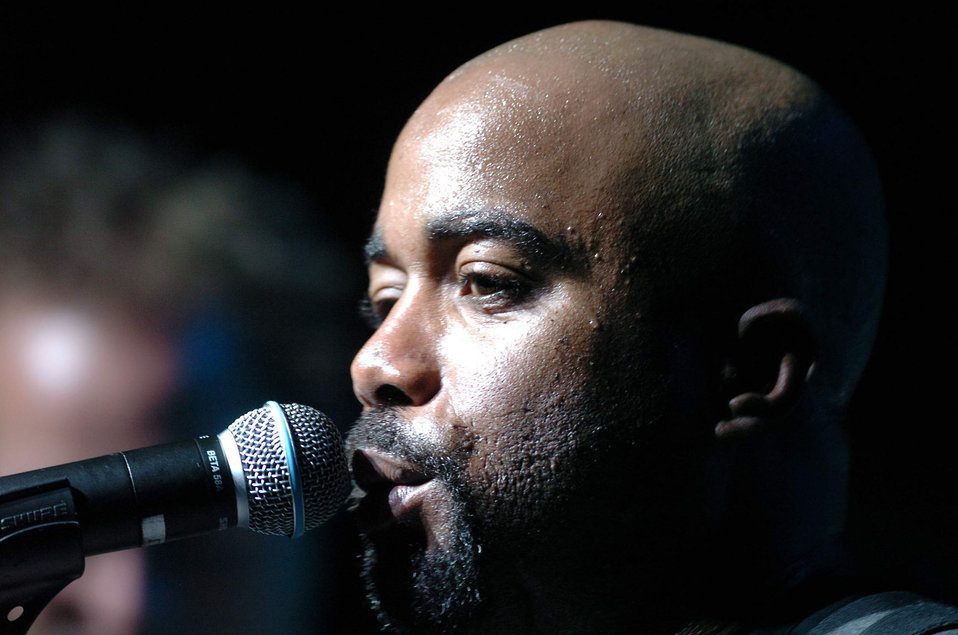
Give a hoot

YOKOTA AIR BASE, Japan -- Darius Rucker, lead singer of Hootie and the Blowfish, sings to a crowd during an Operation Pacific Greetings tour concert here May 19. The tour features performances by Band of the U.S. Air Force Reserve, the Pacific Air Force Band-Asia and New England Patriots' cheerleaders.